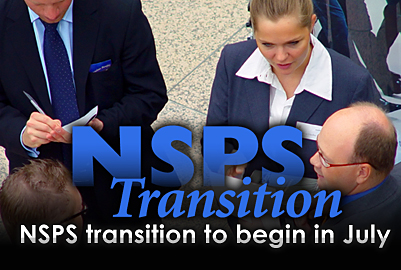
Air Force civilians set for transition from NSPS to begin in July

The majority of Air Force civilians will begin to transition from the National Security Personnel System to the General Schedule beginning July 4, 2010, and continuing through Sept. 12, 2010.